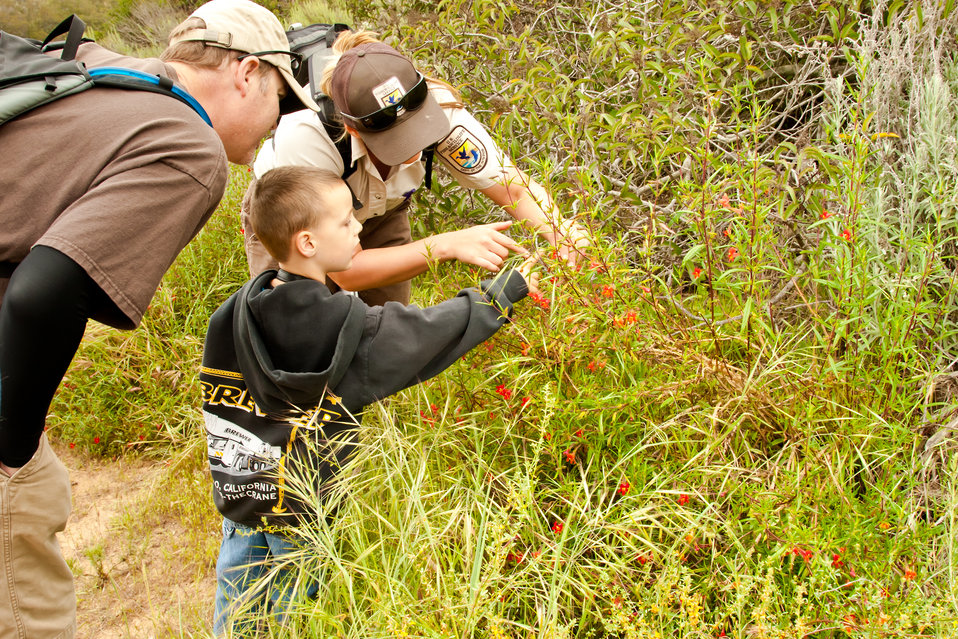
Refuge Interpretive Ranger shows visitors a special flower

Interpretive Ranger Lisa Cox shows visitors the funny strategy that Monkey flower uses for pollination up close, on Earth Day 2012